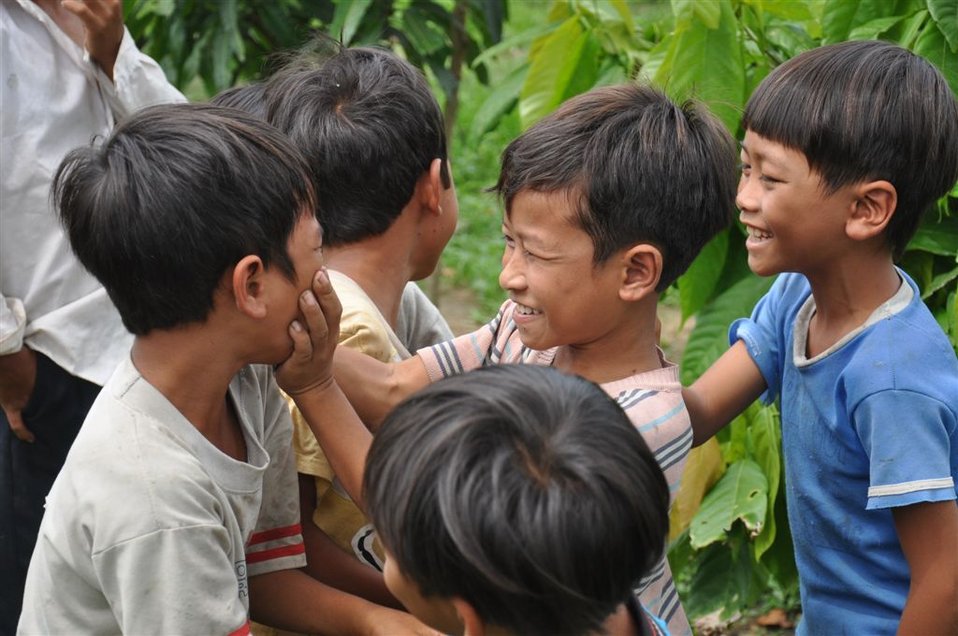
Local populations benefit from new cocoa crop techniques and market access.